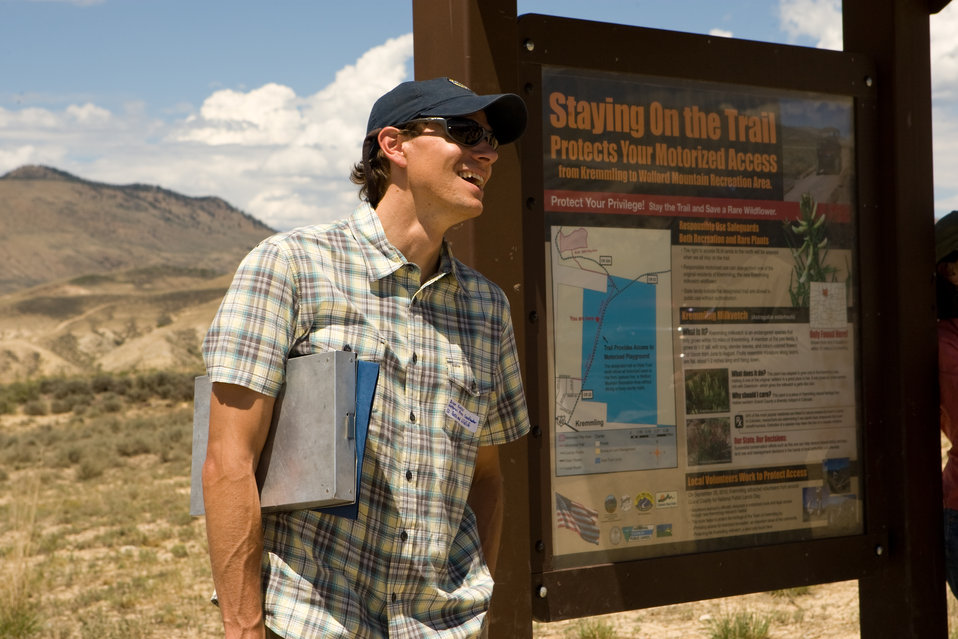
Natural Areas Program Kiosk in Kremmling

The Colorado Rare Plant Conservation Initiative (RPCI) is a partnership of 23 statewide and regional agencies, private organizations, and academic institutions working to conserve 121 rare plants in Colorado. As part of these efforts the group developed the Colorado Rare Plant Conservation Strategy, developed Best Management Practices to reduce energy development impacts, addressed climate change, and developed focused strategies for the conservation of individual species at eight priority landscapes. The group has also worked to coordinate volunteer efforts for plant conservation across the state.